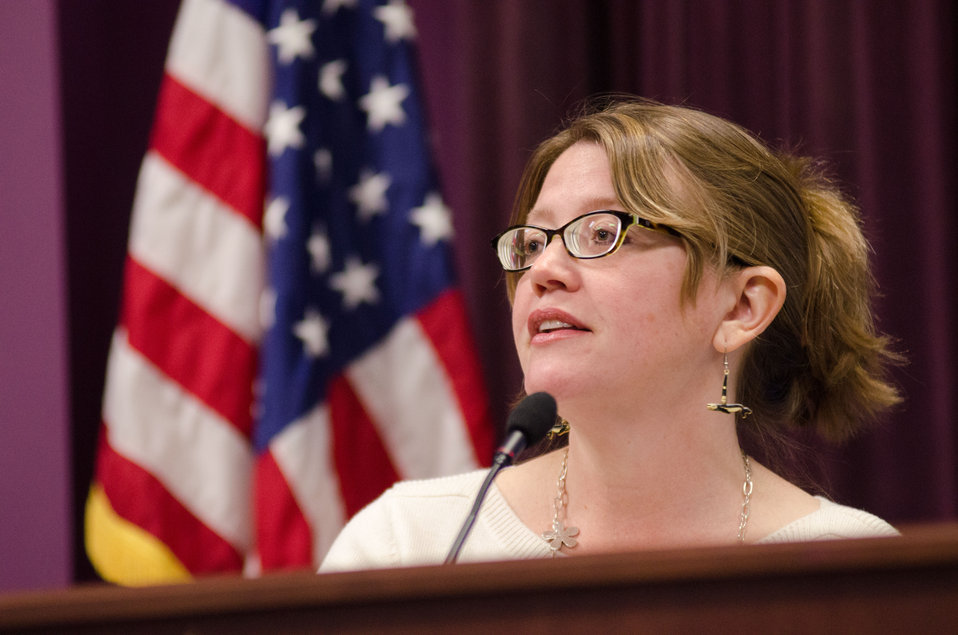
Victory Farms, Inc. owner Gina Cavallo Collins speaking during the Marketing Panel discussion of the “Virginia State University (VSU), U.S. Department of Agriculture (USDA) and Virginia Farmers Working Together” outreach workshop in the VSU, L. Douglas Wilder building on Thursday, March 7, 2013, in Petersburg, VA.